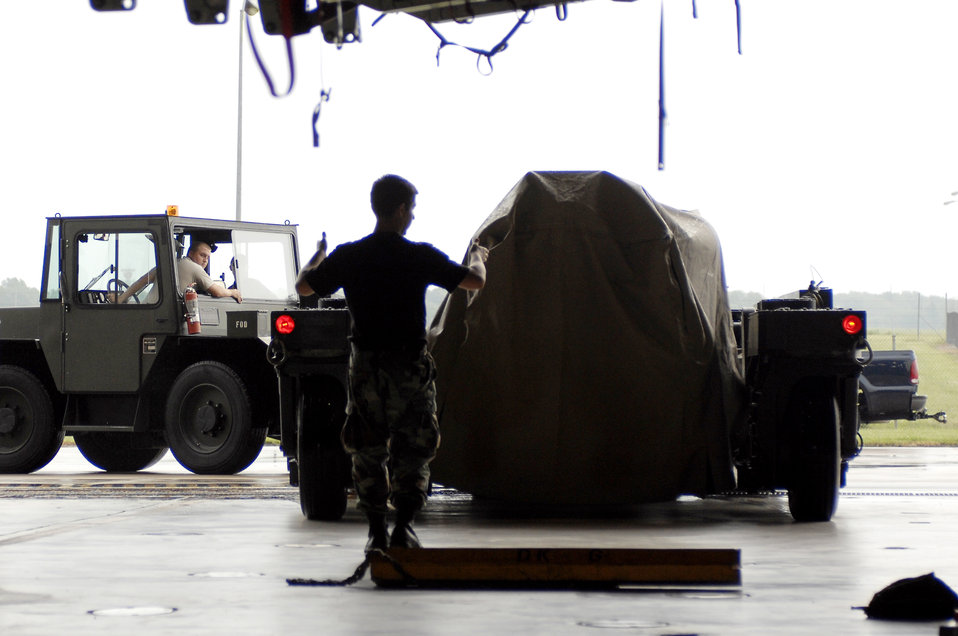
Whiteman Airmen test nuclear weapon mission

Members of the 509th Aircraft Maintenance Squadron back a weapons load trailer into a B-2 Spirit dock in preparation to load mock bombs into a B-2 bomb bay Aug. 17, 2009 at Whiteman Air Force Base, Mo. The weapons load is part of the 72nd Test and Evaluation Squadron's Combat Sledgehammer.